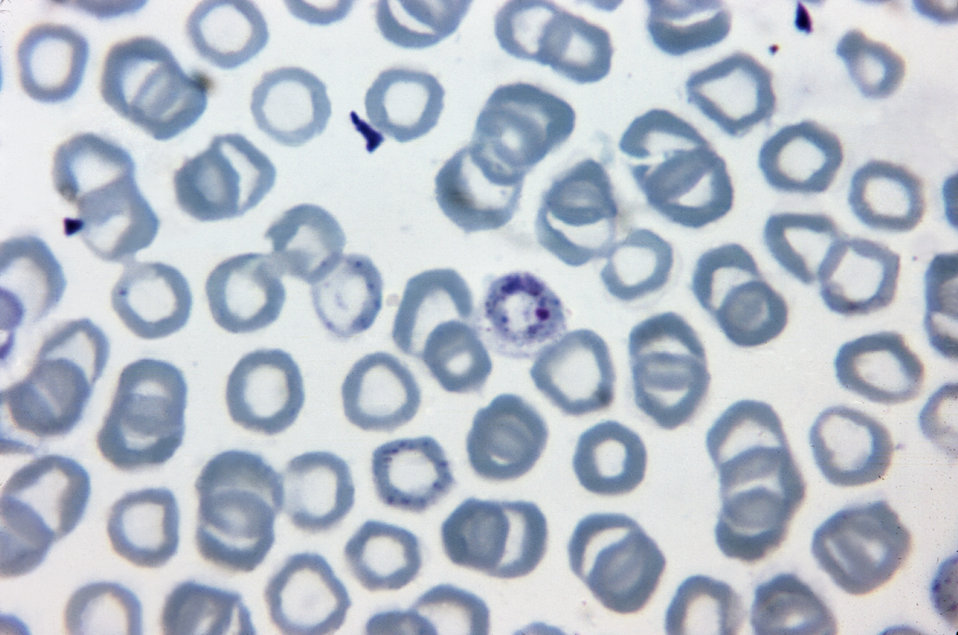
This Giemsa stained micrograph is an example of a slightly alkaline, basic slide that yielded a blue colored resultant stain.